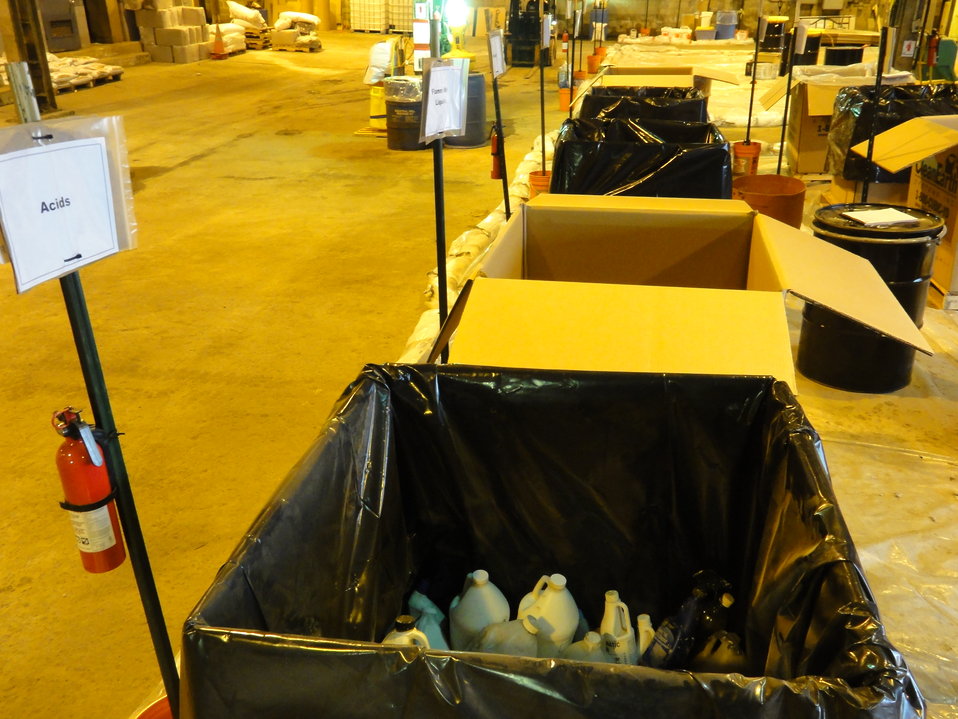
December 2, 2012 - Bins lined up by category inside Staten Island Collection Area

Bins labeled for pesticides, acids, latex paint, and much more line the interior of this facility. Use of the Fresh Kills, Staten Island Sanitation Plant for this collection and categorization of wastes is courtesy of the City of New York. From this collection point, EPA has shipped 150, one cubic yard, boxes of household hazardous waste materials off site for proper disposal for the Sandy Response.